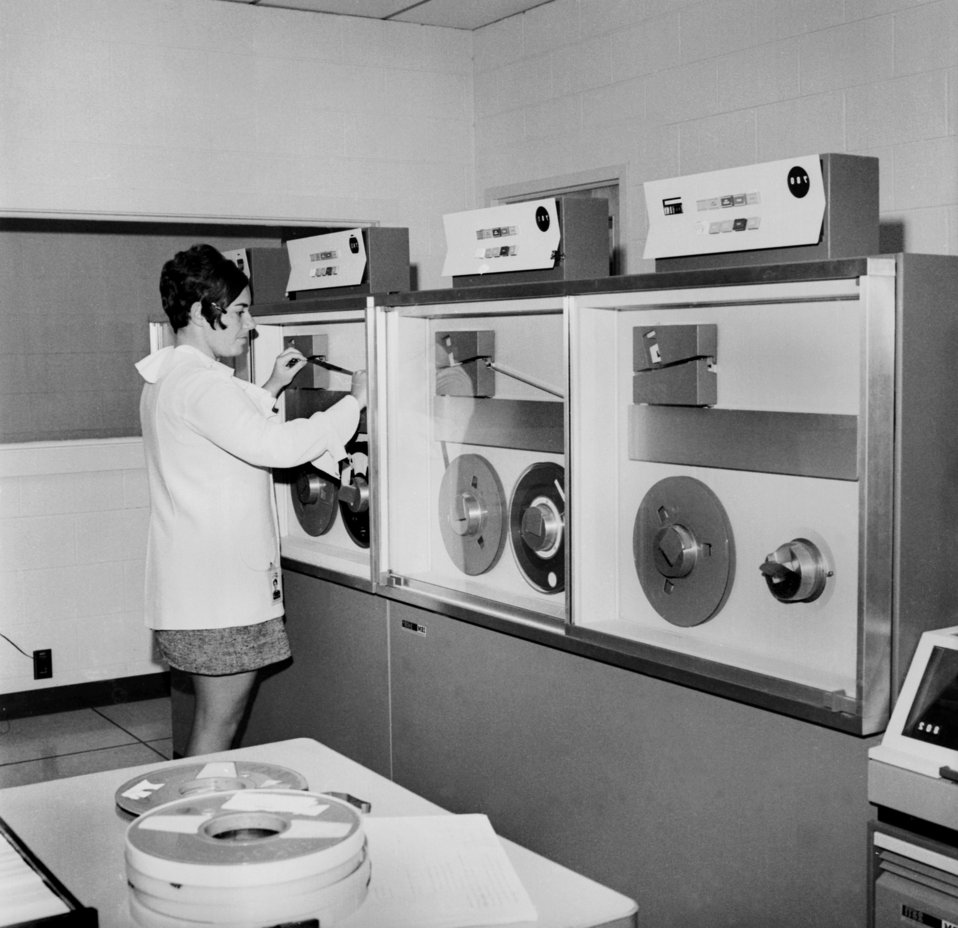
Loading Tape on a Computer Oak Ridge

70-349a DOE photo by Frank Hoffman

Series Federal Women's Program Oak Ridge Tennessee 11-5-1970